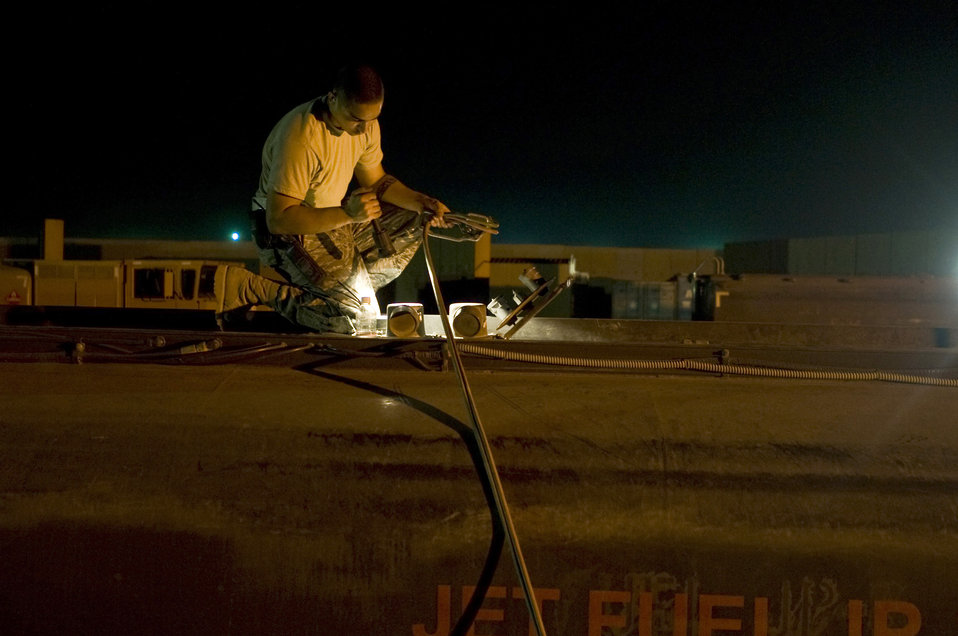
Gas and go

Senior Airman Greg Crews tops off fuel for his truck Aug. 22 at Ali Base, Iraq. The fuels flight supports not only the Air Force, but is a critical asset for the Navy and Army providing the fuel needed 24 hours a day. Airman Crews is deployed from Hurlburt Field, Fla.